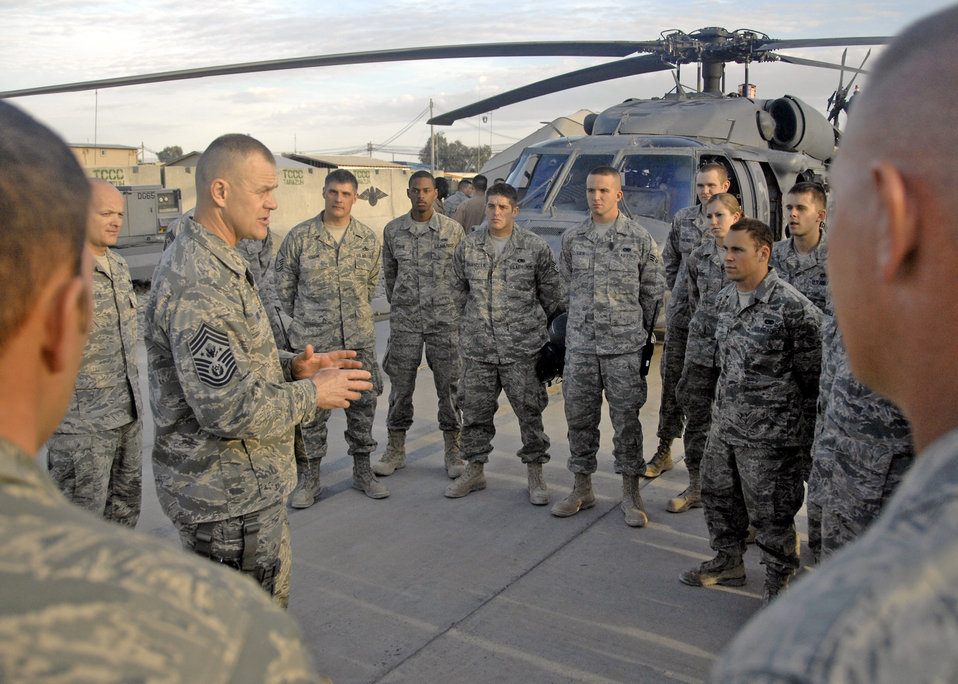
CMSAF visits Kandahar Airmen

Chief Master Sgt. of the Air Force James A. Roy speaks to Airmen from the 55th Expeditionary Rescue Squadron about the impact and role they play in the Air Force here, Nov. 29, 2009 at Kandahar Airfield, Afghanistan. Chief Roy spent two days touring Kandahar Airfield's many squadrons and offices listening and talking to Airmen.